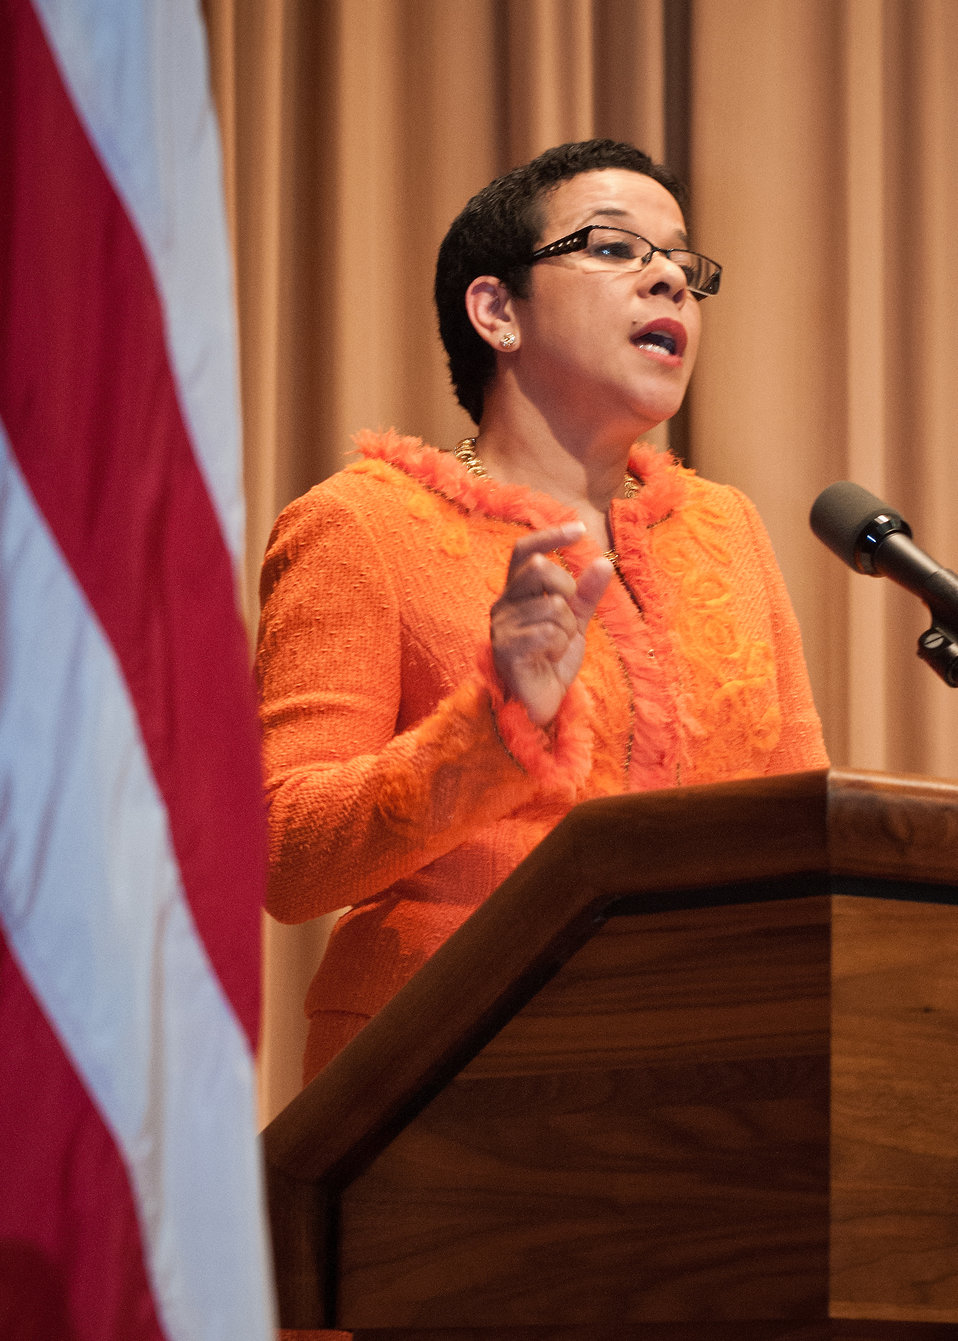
Agriculture General Counsel Ramona Romero gives the opening remarks at the U. S. Department of Agriculture (USDA) 2012 Hispanic Heritage Month in Washington, D.C. on Thursday Sept. 20, 2012. General Counsel Romero spoke of the cultural, diverse and economic contributions Hispanic Americans have made to the United States. The theme of the event was, “SOMOS UNO” “We Are One” Diversity United, Building America’s Future Today.